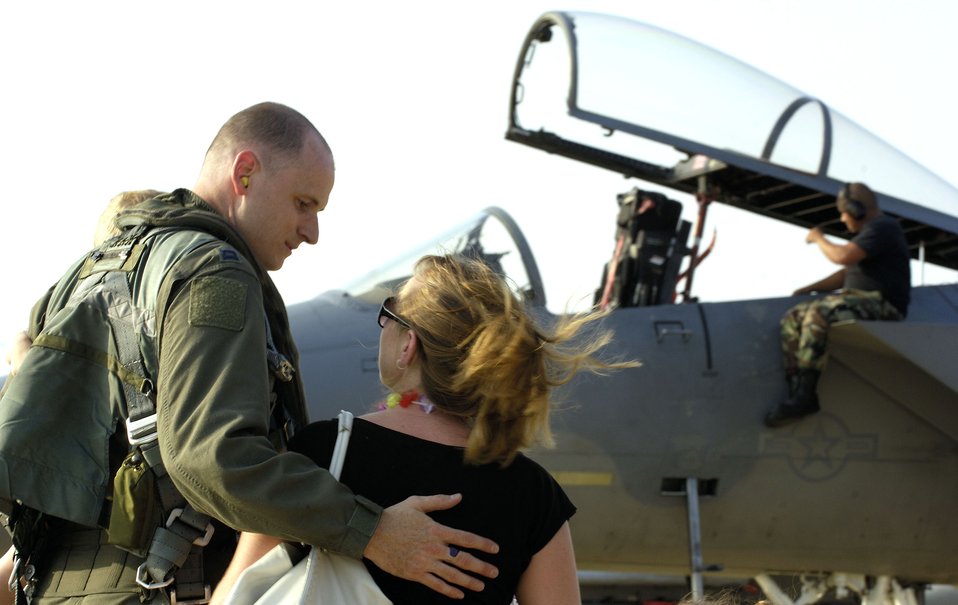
Langley aircraft return home

Capt. Matt Johnson, an F-15 Eagle pilot with the 71st Fighter Squadron, is welcomed home by his wife, Landell, upon his return to Langley Air Force Base, Va., on July 28. Captain Johnson had been on temporary duty in Savannah, Ga. The 27th, 71st and 94th Fighter Squadrons have been flying sorties and participating in exercises around the country while upgrade repairs were being done to their home runway.